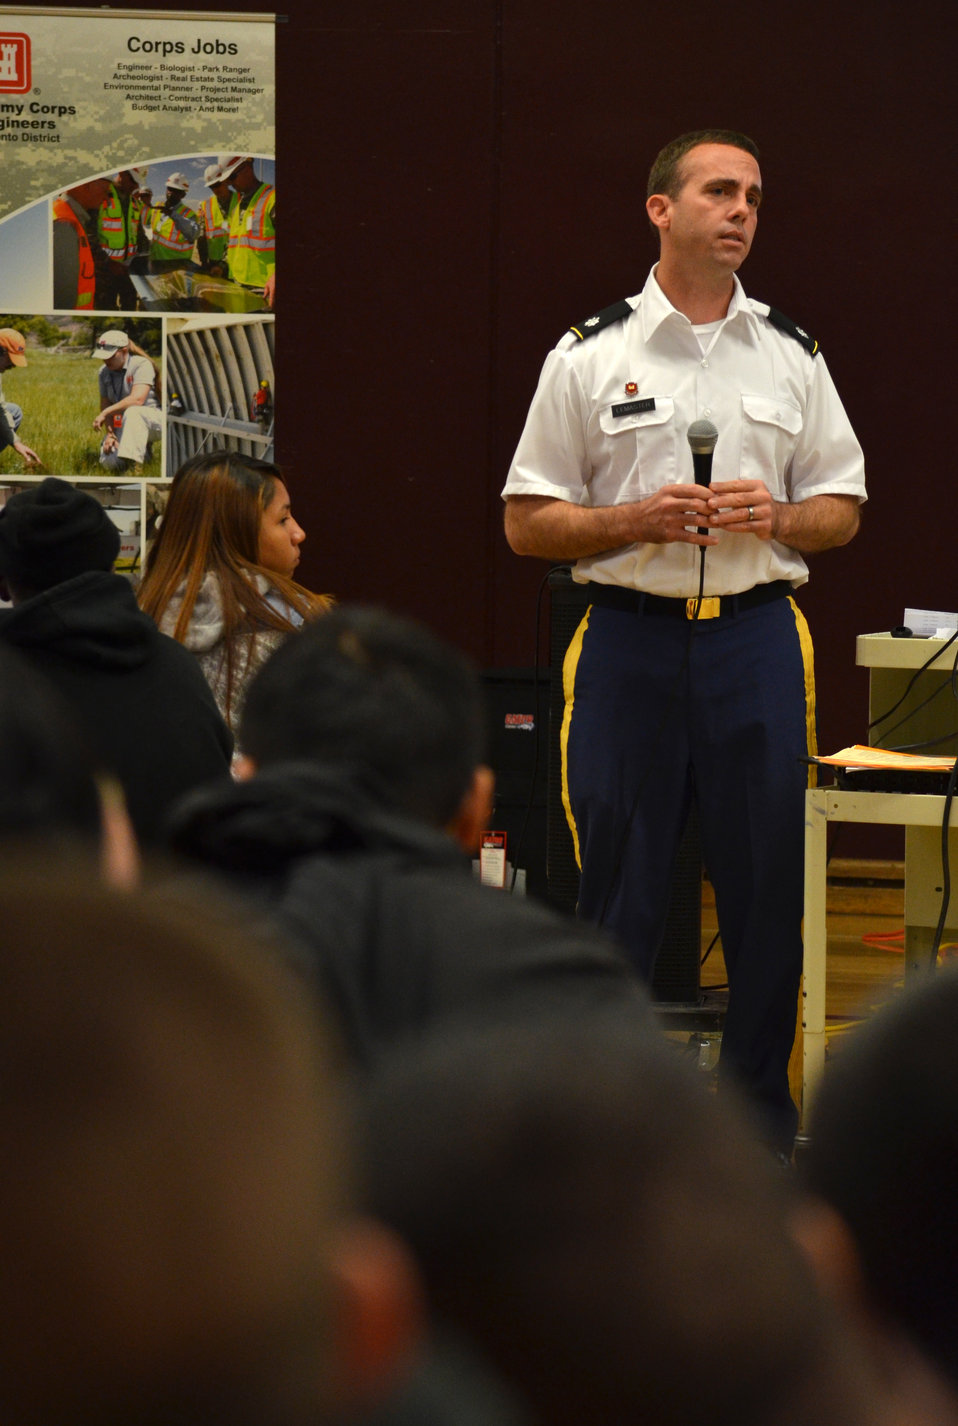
Lt. Col. LeMaster stumps for STEM Sacrament's Hiram W. Johnson High School

Lt. Col. Braden LeMaster, deputy district engineer for the U.S. Army Corps of Engineers Sacramento District, speaks to students at Hiram W. Johnson High School in Sacramento, Calif., during a science, technology, engineering and mathematics - or STEM - event Nov. 9, 2012. The district hosted the STEM event for 125 students, discussing STEM-related degrees and careers, and providing three fun and team-focused engineering challenges.